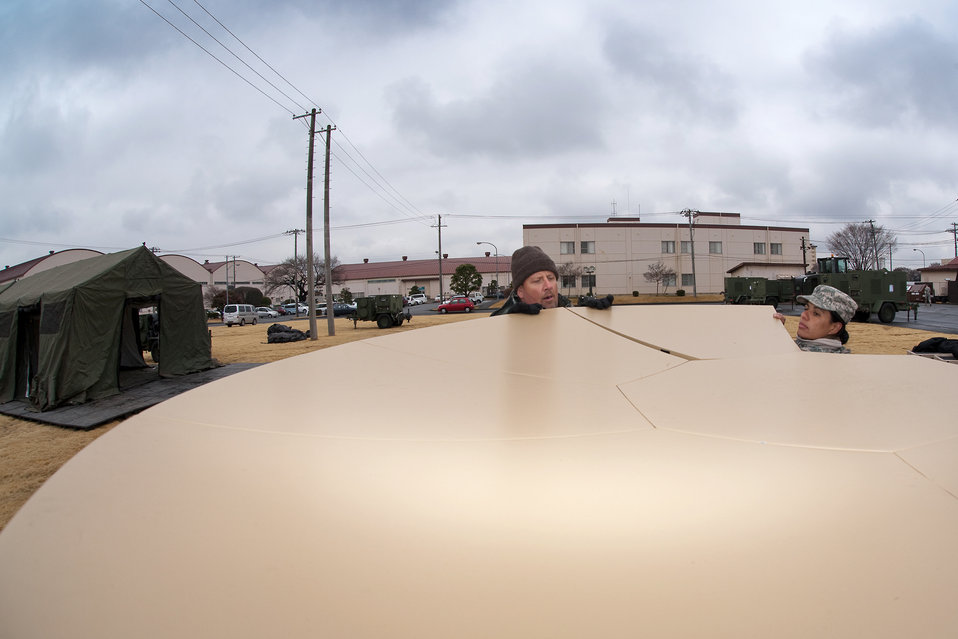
Yokota AB temporarily grows to accommodate Operation Tomodachi support

Members from Pacific Command's Joint Communications Support Element set up a Hawkeye III portable telecommunications system March 22, 2011, at Yokota Air Base, Japan. The system will service a series of tents erected as additional workspaces in support of Operation Tomodachi.